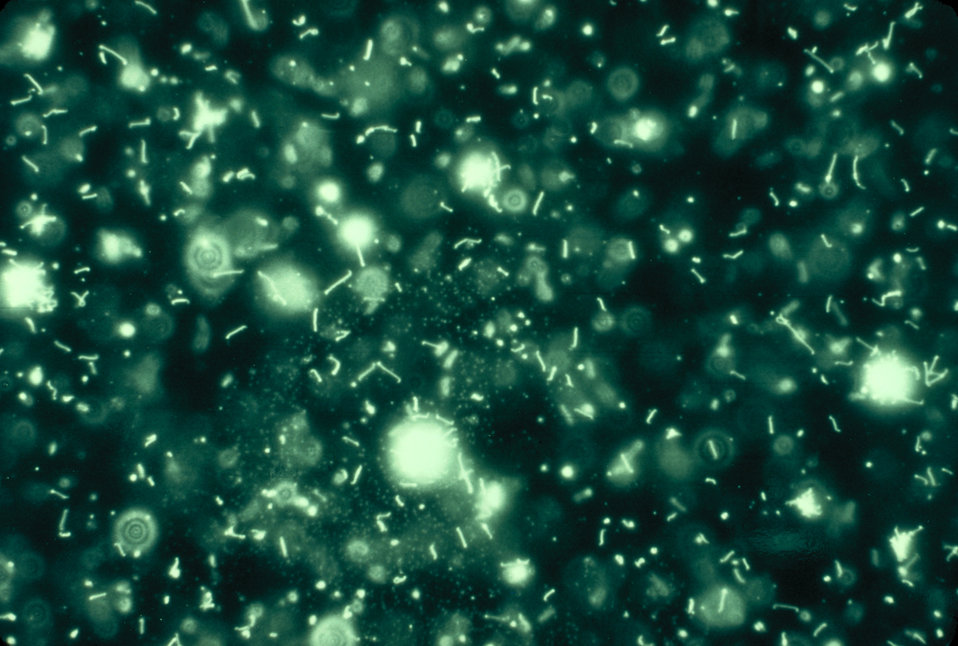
Photomicrograph of leptospiral microscopic agglutination test with live antigen using darkfield microscopy technique.